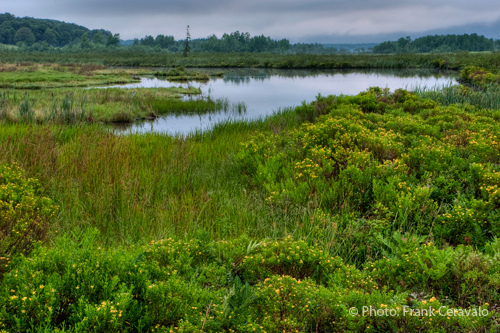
Beaver Pond at Camp 71